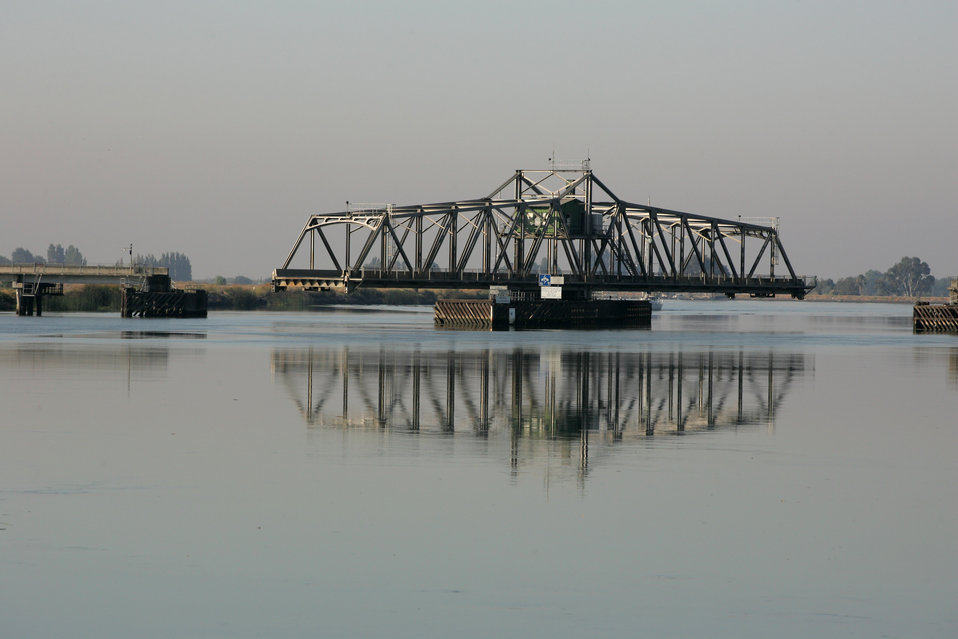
TYLER ISLAND,Calif.(Sept.7,2006)--A turntable bridge in the delta viewed from Tyler Island accomodates car traffic and boats.The U.S. Army Corps of Engineers, Sacramento and San Francisco Districts, has multiple studies and projects addressing the mission areas of Ecosystem Restoration, Flood Risk Management, Navigation, and Watershed Planning within the Delta region. The study boundaries and mission areas of these ongoing projects sometimes coincide, complicating planning and coordination efforts. In addition to the projects undertaken by the Corps, numerous other Federal, State, and local efforts are underway. The key component to the success of each of these initiatives will involve sharing of information, cooperation, collaboration, and partnership.